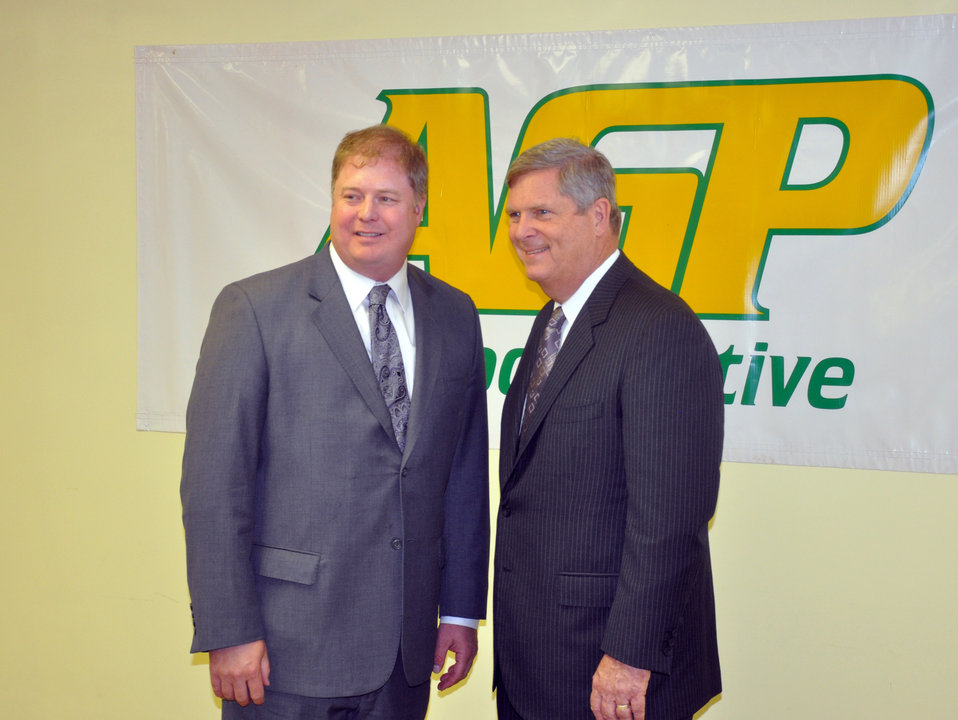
Agriculture Secretary Tom Vilsack and Iowa Biodiesel Board Executive Director Randy Olson pose for a picture on Sept. 14, 2012 at AGP’s biodiesel plant in Sergeant Bluff, IA. Secretary Vilsack discussed EPA’s announcement that set the 2013 volume of biodiesel products requirement for diesel fuel in markets at 1.28 billion gallons under the Energy Independence and Security Act of 2007 (EISA).